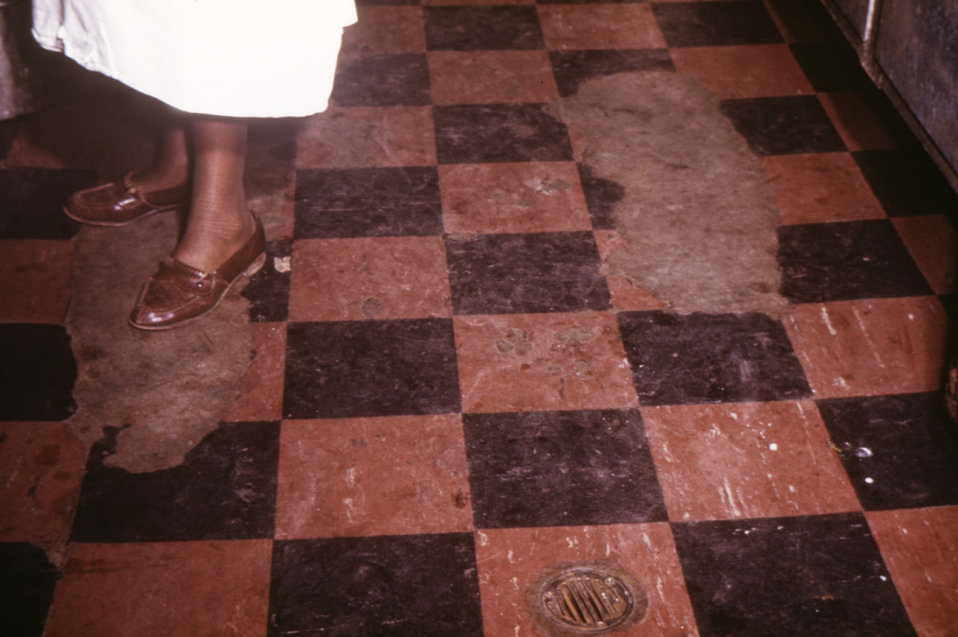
The floor in this food preparation area was unsanitary due to its poor condition allowing it to trap food debris.